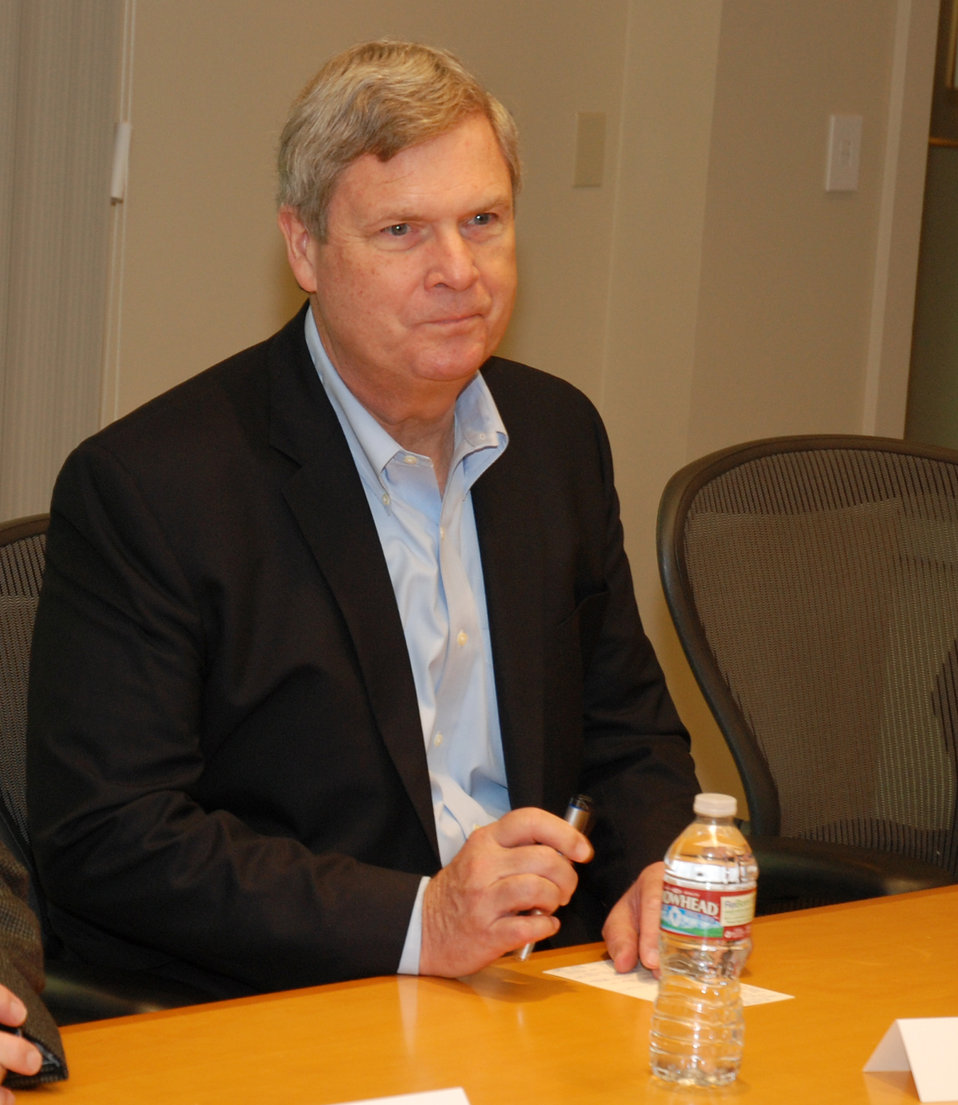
Agriculture Secretary Thomas Vilsack attends the California wine growers roundtable at Mondavi Winery in Napa, CA on Sunday, Nov. 17, 2013.